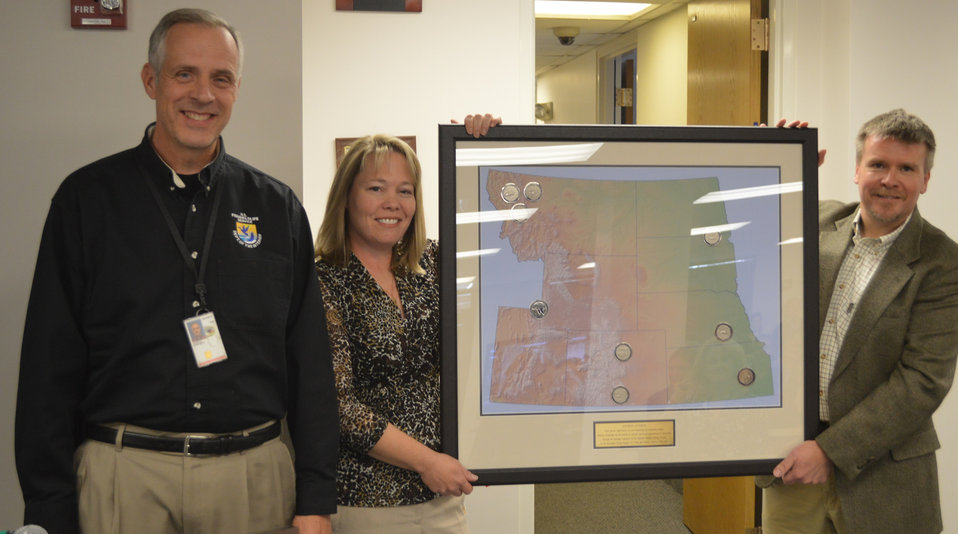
Regional Director Steve Guertin Moves on to Senior Leadership Position

On November 1, 2012, USFWS Mountain-Prairie Regional Director, Steve Guertin, served his last day as Regional Director before moving on to a senior leadership position at Headquarters.

Regional leadership and partners shared their memories of Steve's outstanding leadership and his unique ability to leverage his outstanding technical skills while maintaining a very personable persona - all amidst a variety of challenging issues.